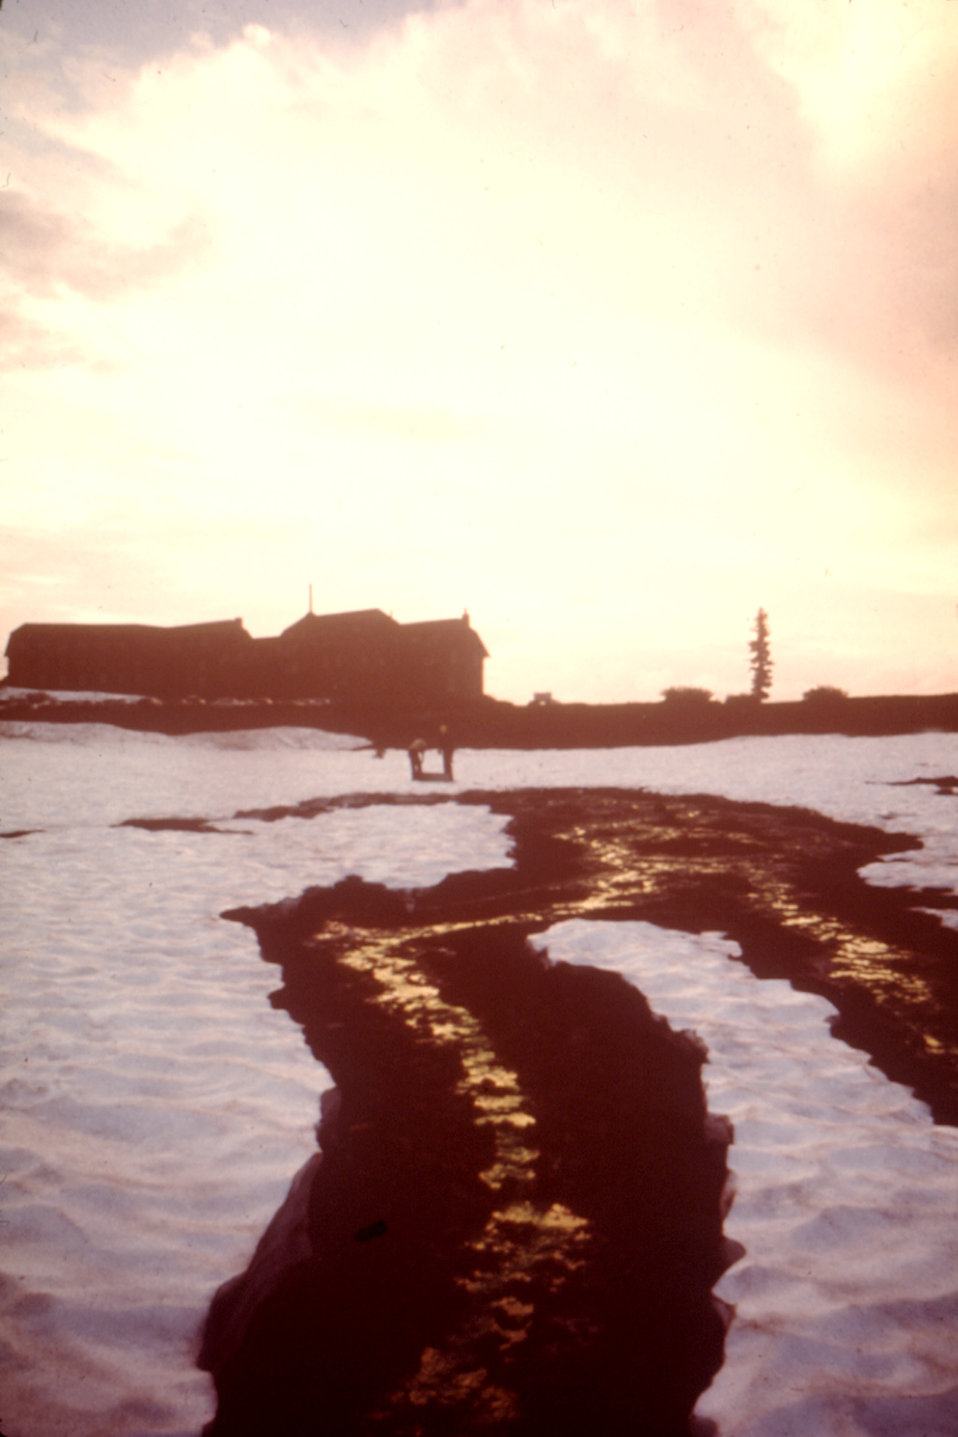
This image is showing evidence of water contamination marked by fluorescent dye in Crater Lake National Park, Oregon.